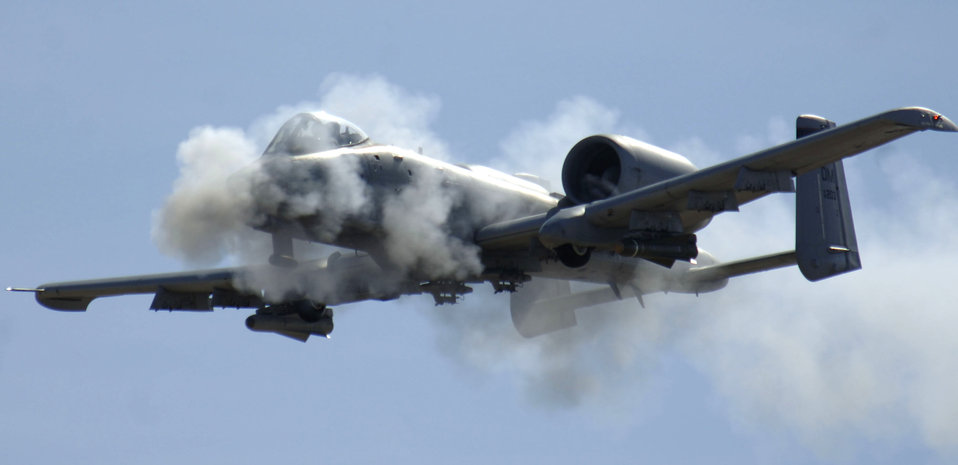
Hawgsmoke 2006

An A-10 Thunderbolt II, fires the 30 mm gun at a low angle strafe, as part of the 2006 Hawgsmoke competition, Thursday, March 23, 2006, at the Barry-Goldwater Range, Gila Bend Air Force Auxiliary Field. There are four parts of the competition. Each team has four members in which they have 100 bullets each to use toward the target. This year's competition coincides with the 30th anniversary of the Warthog. Twenty squadrons from around the world come together to gain the honor of the